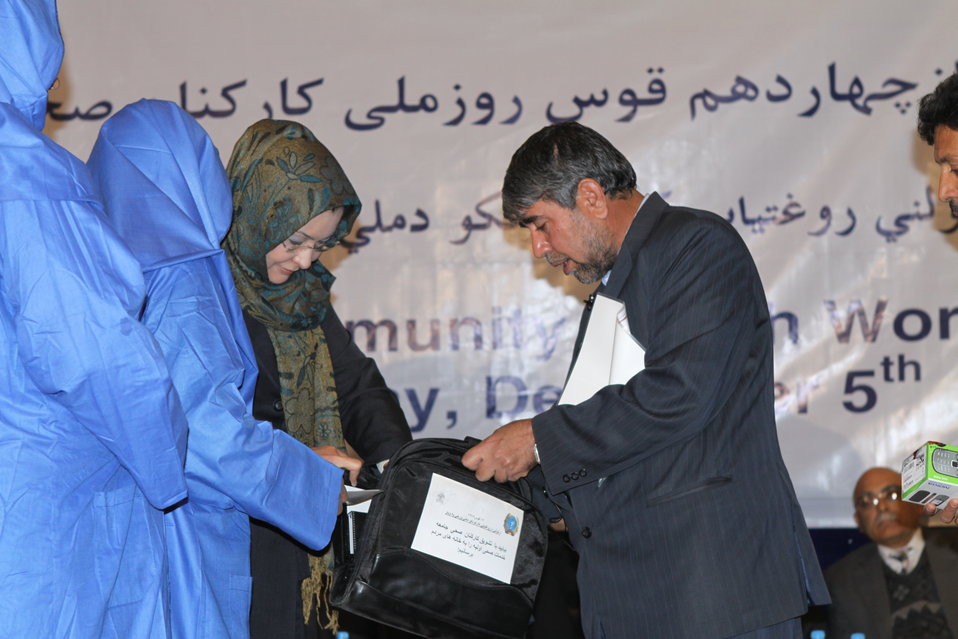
Community Health Workers Celebrated

Kabul, Afghanistan | December 5, 2010 — In support of the United Nations designated International Volunteer Day for Economic and Social Development, Afghanistan’s Ministry of Public Health celebrated its annual Community Health Worker Day today. Acting Minister of Public Health Dr. Suraya Dalil, USAID Senior Deputy Mission Director Robert Hellyer, other government officials, and international donors joined in recognizing the critical contribution of community health workers in Afghanistan and encouraging them to continue their voluntary support to their communities.
The event praised the contributions of the more than 22,000 volunteers throughout the country who deliver community level health-education, counseling, and services out of village health posts located in private homes. The Ministry of Public Health envisioned that community-based healthcare programs will actively encourage communities and families to adopt healthy lifestyles and behaviors, and provide families access to high quality and socially acceptable preventative medicine and life-saving services.
“We have 22,000 community health workers in Afghanistan that are able to implement the basic and standard medicines. They all have been trained through a job description,” said Minister Dalil. Addressing the health workers, she added, “I am proud and feel powerful that I have people like you.”
USAID-funded health projects collaborate closely with the Ministry of Public Health to improve the health and nutritional status of Afghans, provide quality primary healthcare, and promote healthy behaviors at the community and household-levels. USAID supported the training of more than 9,000 of the volunteer community health workers currently working in Afghanistan.
“On behalf of the American people, I congratulate the Community Health Workers for their diligence to gain the skills and knowledge necessary to serve their communities in this important role,” said USAID Senior Deputy Mission Director Hellyer. “USAID strongly supports community based health care and believes that quality community-based health services are essential to reaching Afghanistan’s Millennium Development Goals.”
To support the Basic Package of Health Services, USAID assisted in developing the community health worker training manual, helped train community health worker supervisors and master-trainers, facilitated in-service training, and produced and developed reporting tools, job aids, and education materials.